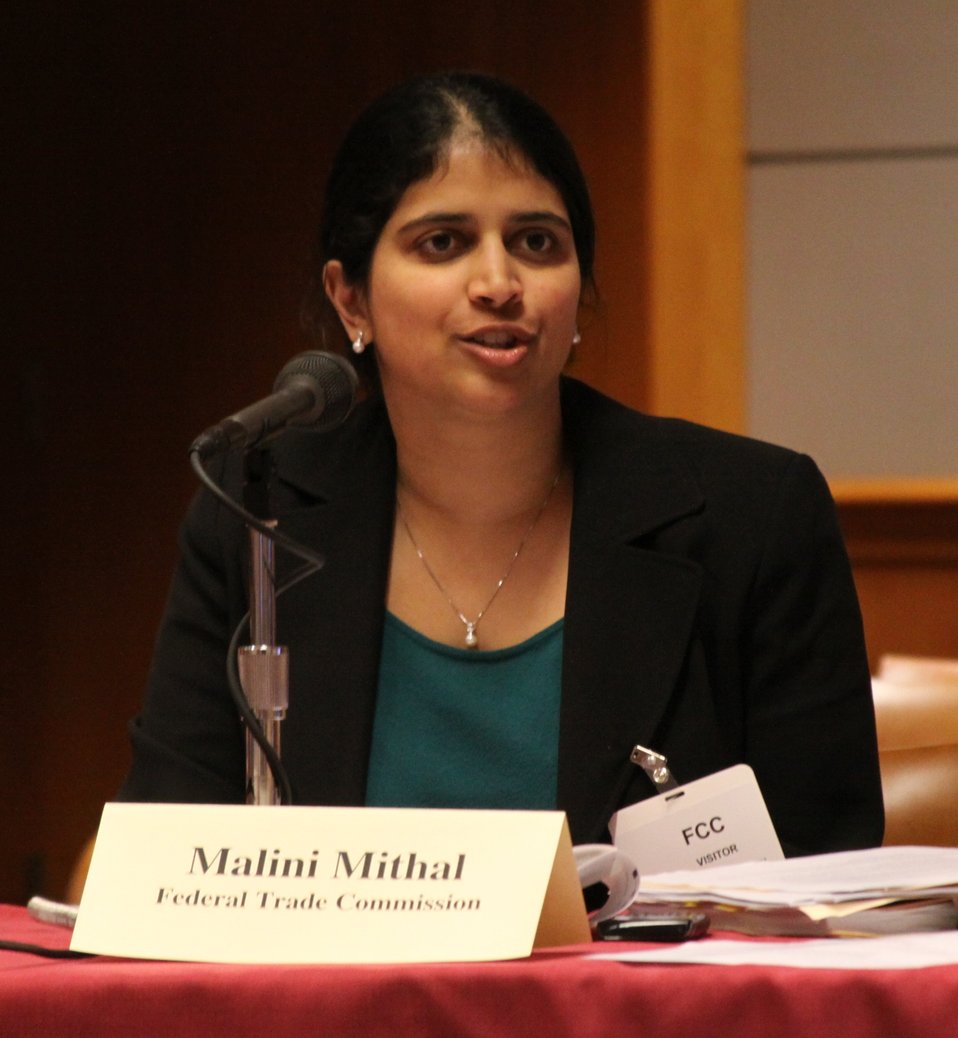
April 17, 2013 Bill Shock and Cramming Workshop